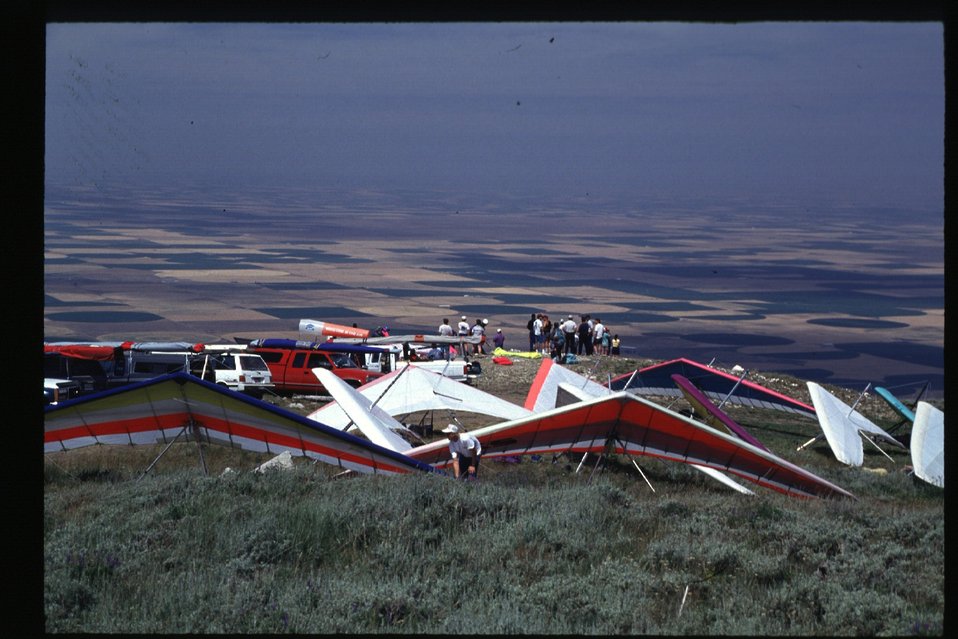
Hang Gliders on King Mountain Arco Idaho Idaho Falls Field Office USRD Upper Snake River District